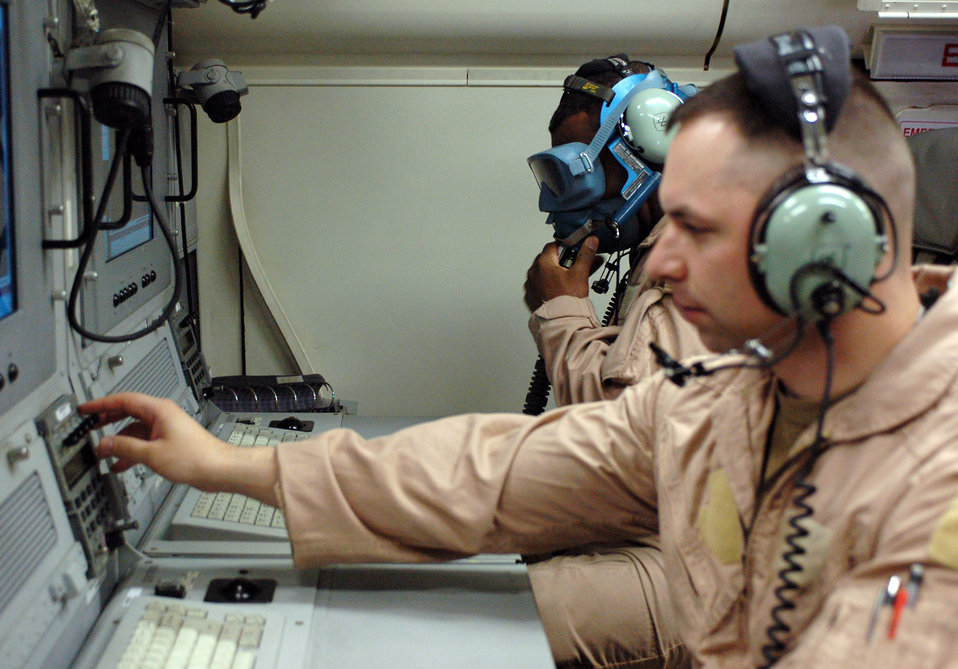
JSTARS are eyes of the night

Army Maj. Darryl Verrett (rear) ensures his oxygen mask works properly while Capt. Stefan Essig begins a computer systems check aboard an E-8C Joint Surveillance Target Attack Radar System aircraft prior to takeoff from an air base in Southwest Asia. JSTARS crews provide support to both air and ground forces. Major Verrett is the deputy mission crew commander and Captain Essig is a senior mission director with the 116th Expeditionary Airborne Command and Control Squadron.